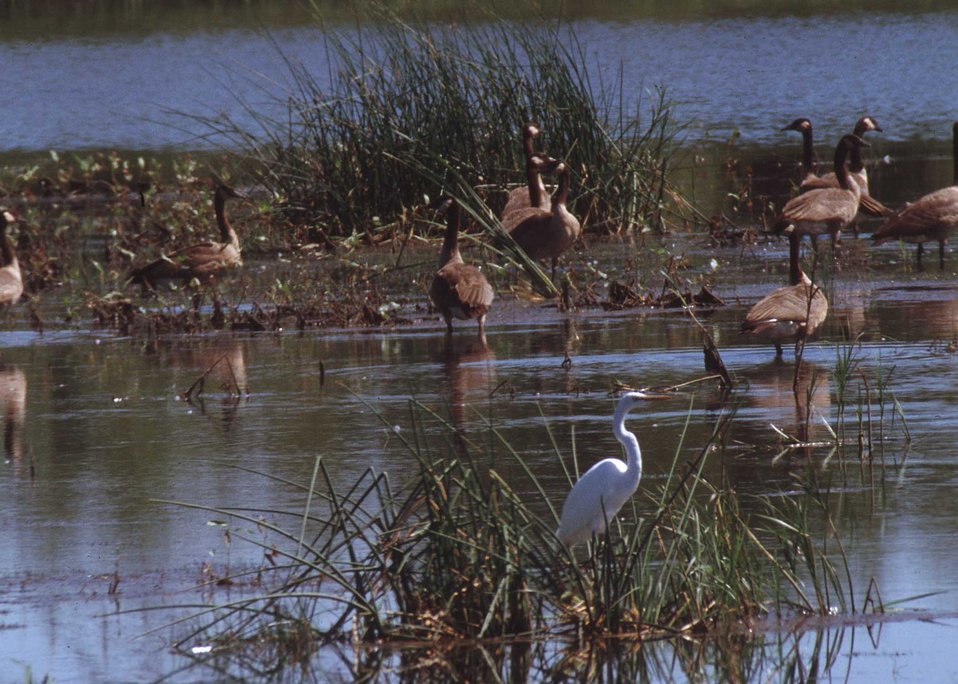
Common egret and Canada geese in a pothole wetland in South Dakota.